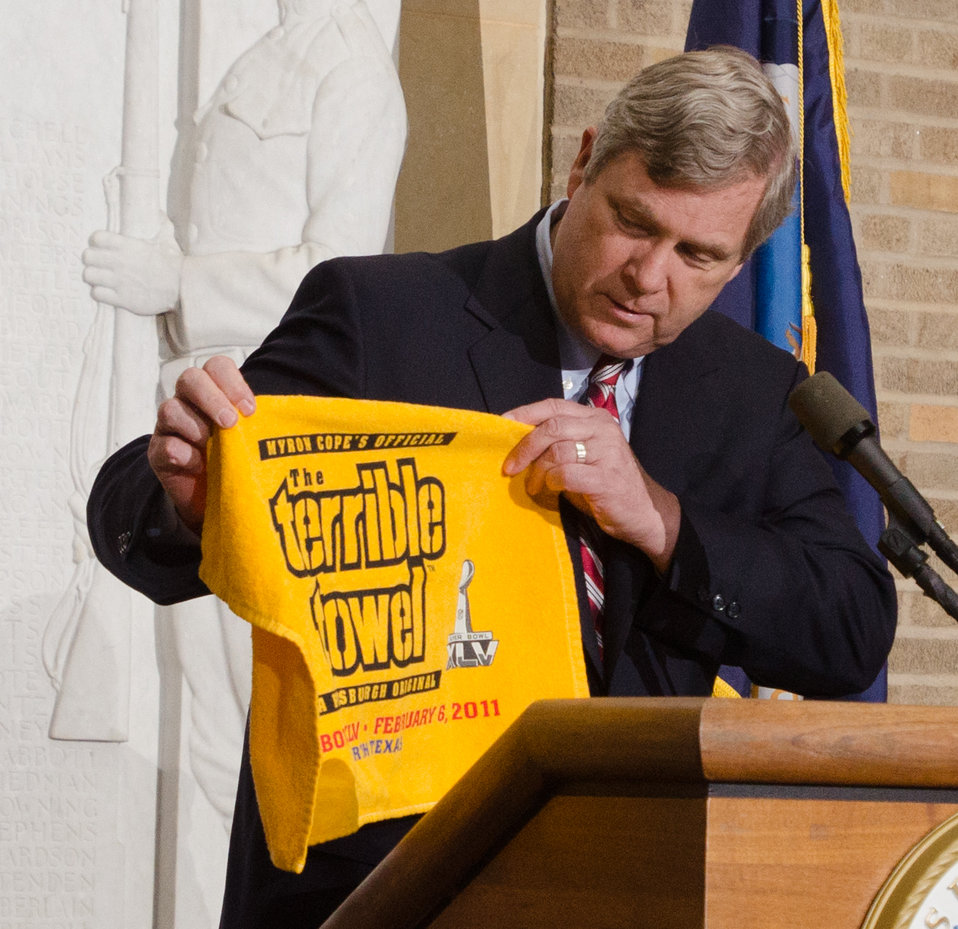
In honor of the keynote speaker, former National Football League Pittsburgh Steelers halfback Robert Patrick 'Rocky' Bleier, Agriculture Secretary Tom Vilsack shows his support of the Pittsburgh Steelers by displaying his own superbowl “terrible towel” at a luncheon with stakeholders from the dairy producers industry, in the Whitten Building Patio, in Washington, D.C. on Tuesday, Feb. 26, 2013. Proceeds from the “terrible towel” help support a school for the mentally and physically disabled. Later, Dairy Management, Inc. (DMI) Chief Executive Officer Tom Gallagher presented Secretary Vilsack and the U.S. Department of Agriculture (USDA) team with a National Football League Fuel Up to Play 60 helmet for the work that USDA has done in support of the dairy industry. 'Rocky' Bleier, told of the importance of milk in his childhood growth, and recounted some of his historic game-winning football plays. Served at the luncheon were Smart Slice pizzas provided by Dominos who use 51% whole-wheat flour with reduced salt and fat toppings; and meet the current USDA school nutrition requirements. During the event Under Secretary for Food, Nutrition and Consumer Services Kevin Concannon, announced the allowance of extended shelf milk such as the Good Cow milks, which provided milk from Fair Oaks Farms.